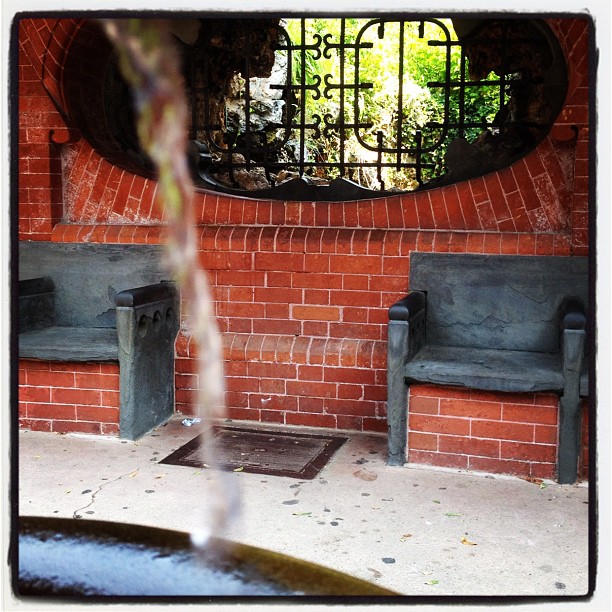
Hot in #dc? Cool off at the Olmsted Summerhouse and grotto on West Front of Capitol.